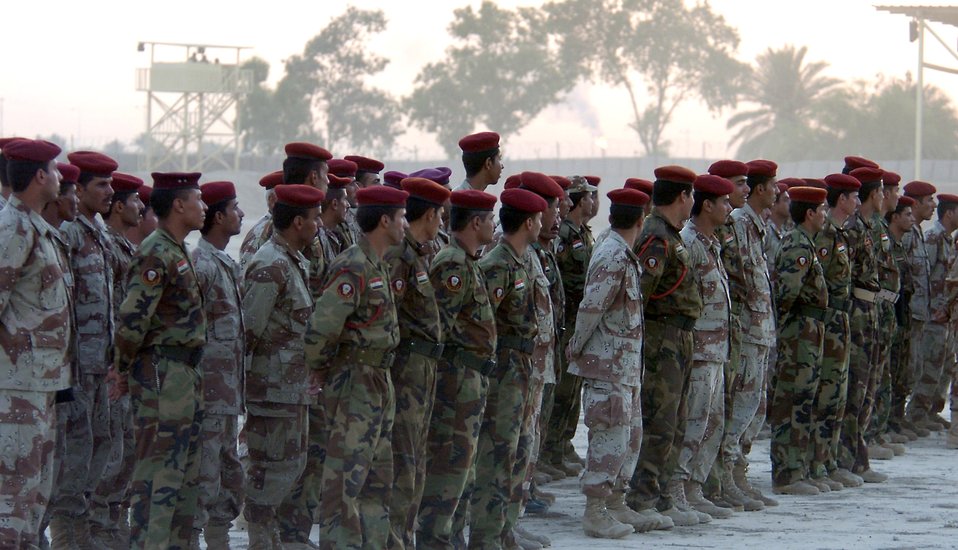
Airmen train Iraqi soldiers on base defense

Soldiers of the 1st Iraqi Army Division/Iraqi Intervention Forces on Ar Rasheed Base, Iraq, line up on Thursday, May 25, 2006. The 250 soldiers, who provide defense for the compound, are trained and advised by five security forces Airmen and their Army commander who live and work on the base.